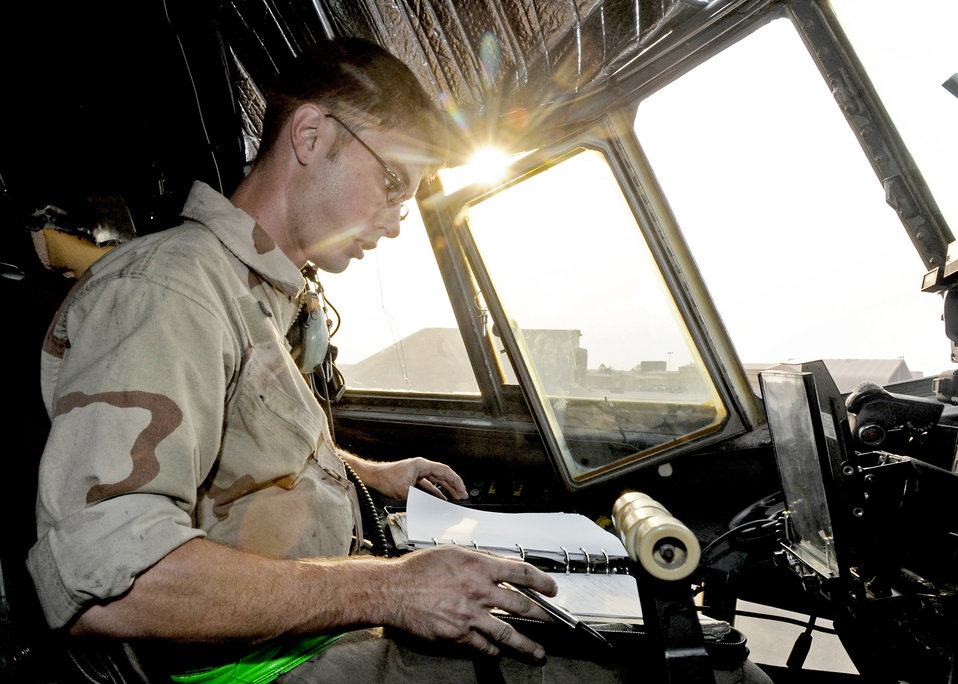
C-130E electronic attack maintenance

Staff Sgt. William Aker reviews maintenance logs before a max-power engine run on a C-130E Hercules Aug. 11, 2010, at an air base in Southwest Asia. Sergeant Aker is a flying crew chief with the 386th Expeditionary Aircraft Maintenance Squadron.